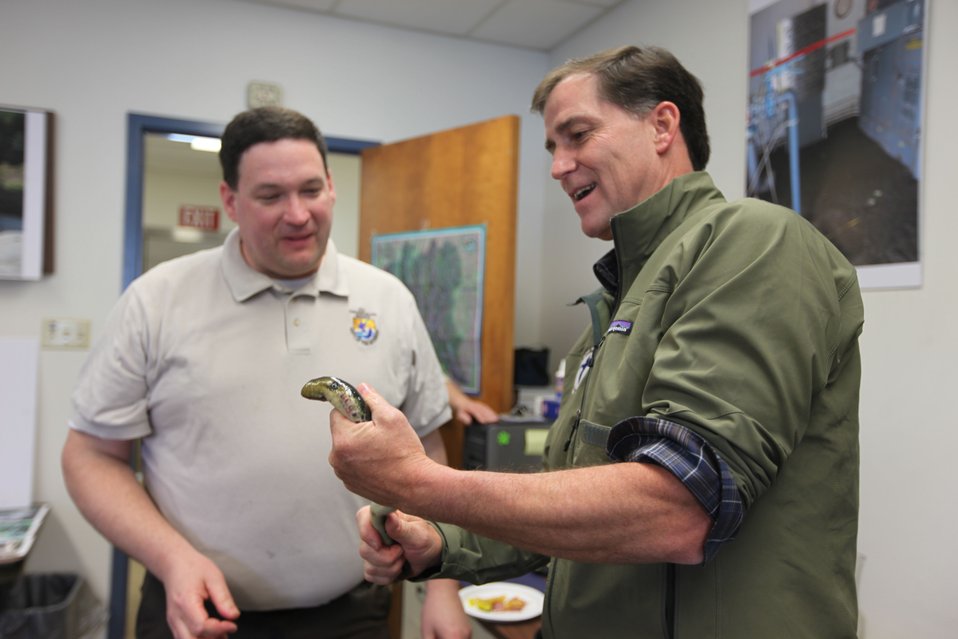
Brad Young, Dan Ashe and a Sea Lamprey

U.S. Fish & Wildlife Service Director Dan Ashe visits the Northeast Region
for a tour of the White River National Fish Hatchery in Bethel, Vermont on
April 27, 2012. The hatchery was devastated by Tropical Storm Irene and
Dan Ashe had the chance to meet and thank the staff for their heroic work.
Director Ashe also visited restoration/flood response/fish passage project
sites in Rochester, Vermont and met with local officials and staff from the
White River Partnership.